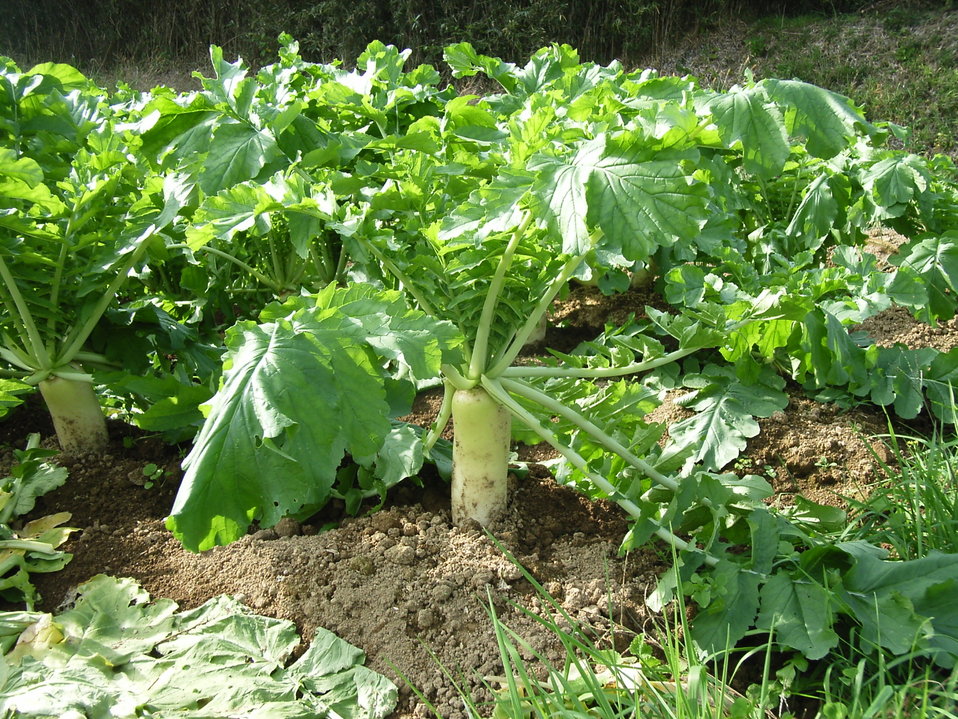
Daikon